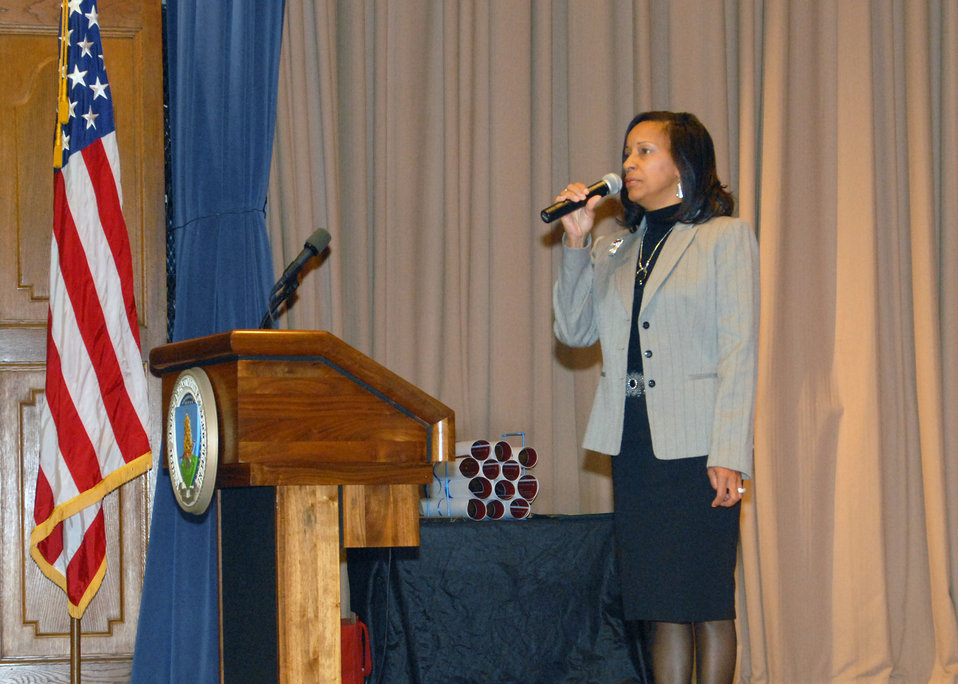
U.S. Department of Agriculture (USDA) Risk Management Agency (RMA) Equal Employment Opportunity (EEO) Specialist Barbara Smith sings the National Anthem at USDA’s Native American Heritage Month Observance in the Jefferson Auditorium at the USDA South Building in Washington, D.C. on Tuesday, Nov. 20, 2012. The theme for this year’s observance is “Serving with Honor, Pride, and Devotion: Country, Land and People”.